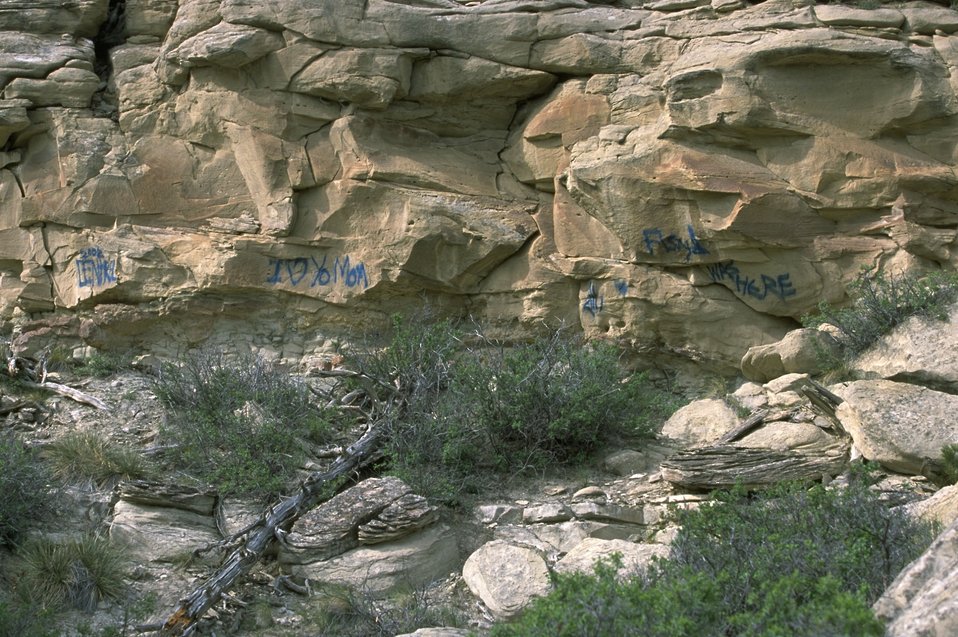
Graffiti found at an illegal ""kegger"" location in the Acton Recreation Area